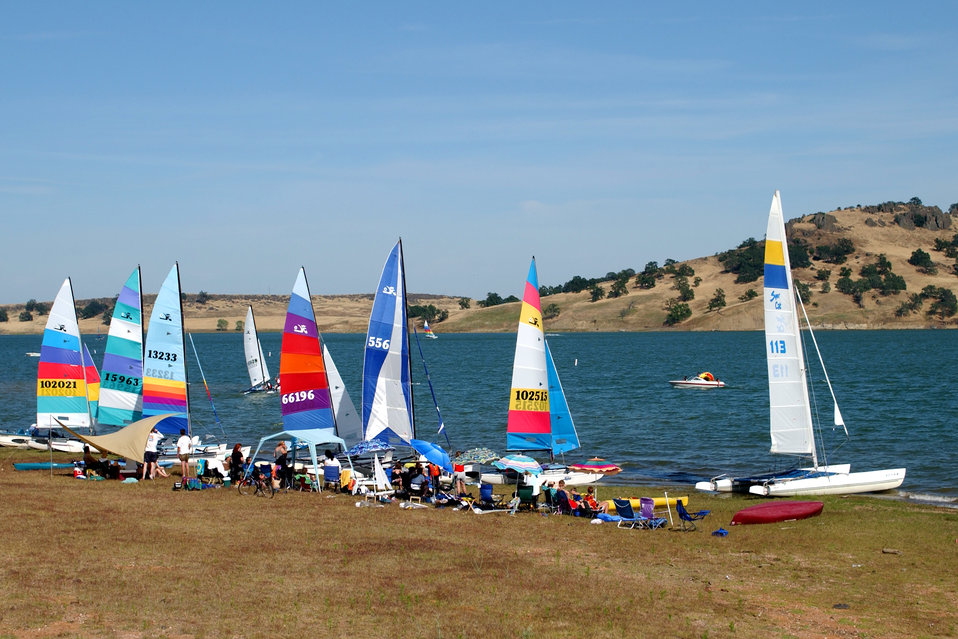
Black Butte Lake

Sailing is one of the many waters sports enjoyed at Black Butte Lake near Orland, Calif., shown May 26, 2002. The lake was formed from the impoundment of Stony Creek in 1963, when the U.S. Army Corps of Engineers Sacramento District completed construction of Black Butte Dam. When full, the lake has a surface area of 4,460 acres, is seven miles long and boasts a shoreline of 40 miles. The dam reduces flood risk for nearby towns and agricultural lands. Black Butte Lake and Dam are managed by the Sacramento District.